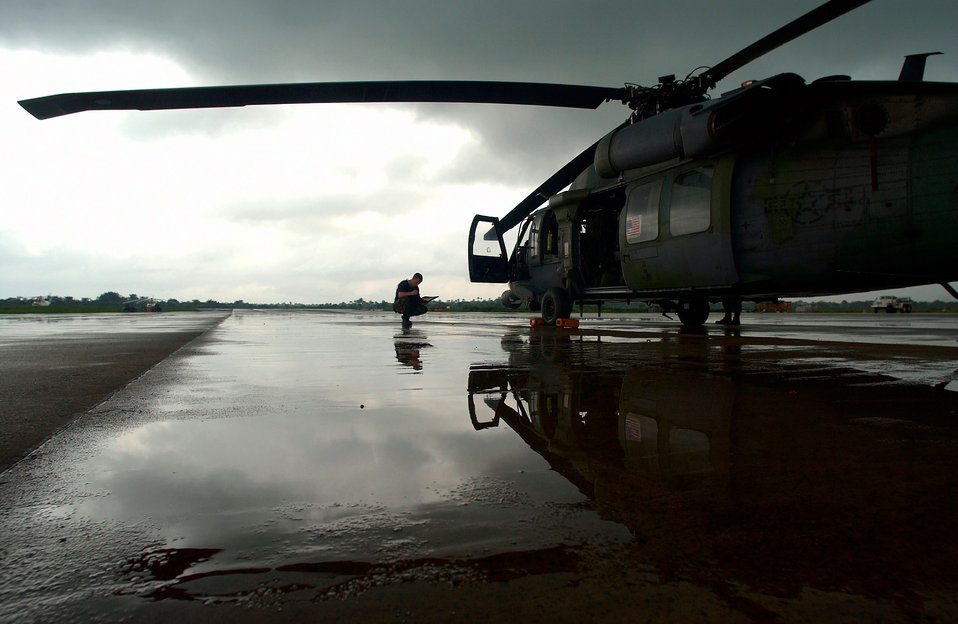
Checking it twice

LUNGI, Sierra Leone -- Staff Sgt. Adrian Bergman performs a preflight check of an HH-60G Pave Hawk helicopter July 16. Bergman is from the 85th Maintenance Squadron, Naval Air Station Keflavik, Iceland. European Command is currently in Sierra Leone to provide personnel recovery and emergency evacuation capability for the Humanitarian Assistance Survey Team in Liberia.